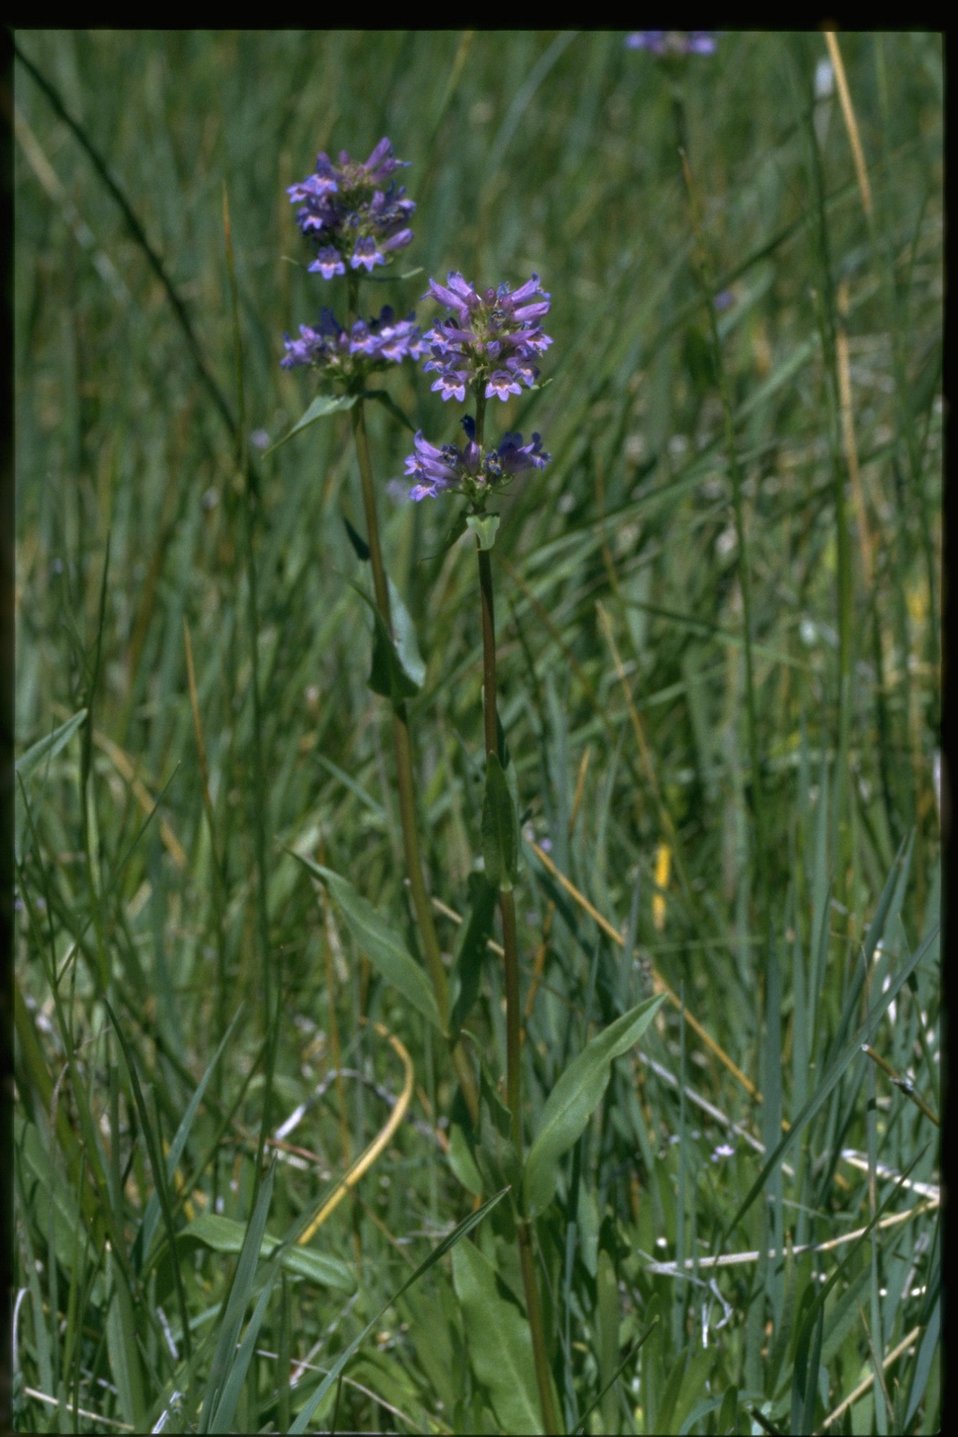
Medium shot of Penstemon wildflowers.